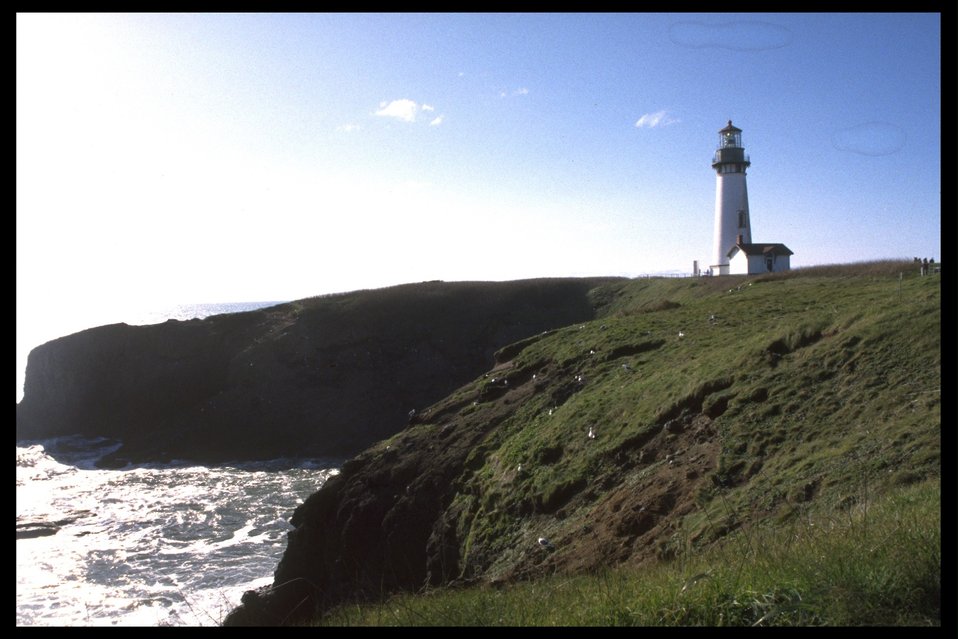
Yaquina Head Lighthouse.